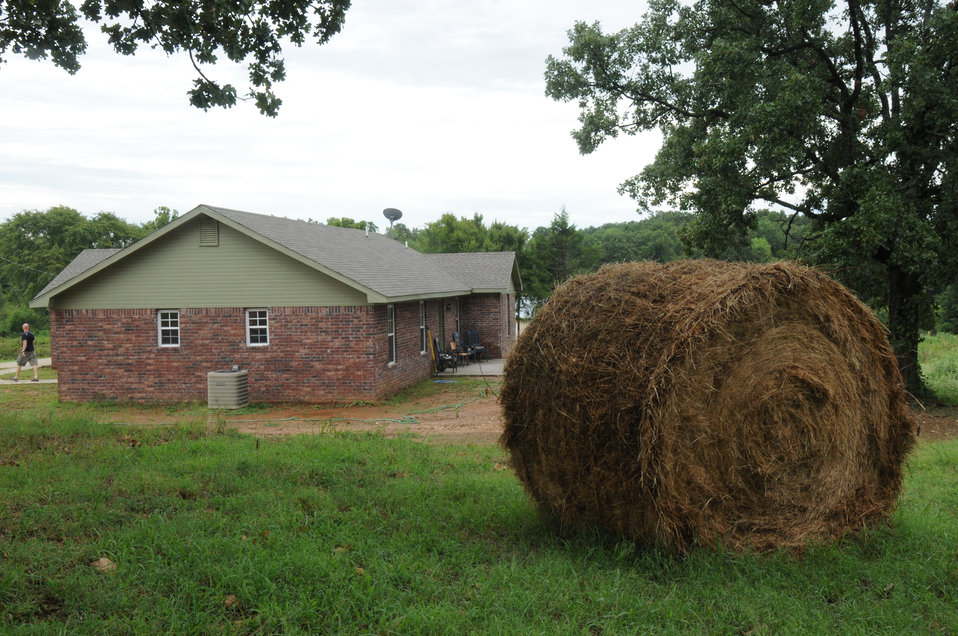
This is Bertha Anne Davis's new home in Fort Coffee, Oklahoma. Mrs. Davis is a single mother raising her son and her 2 nephews and a niece. She received a home loan from the U.S. Department of Agriculture Rural Development (RD) agency using funding from the American Recovery and Reinvestment Act (ARRA) for a home loan of $98 thousand. She was living in a 2-bedroom ranch and now has a new 4-bedroom home in Fort Coffee, Oklahoma. She works for the Fort Coffee, OK school system and is attending night school to get her teaching degree.